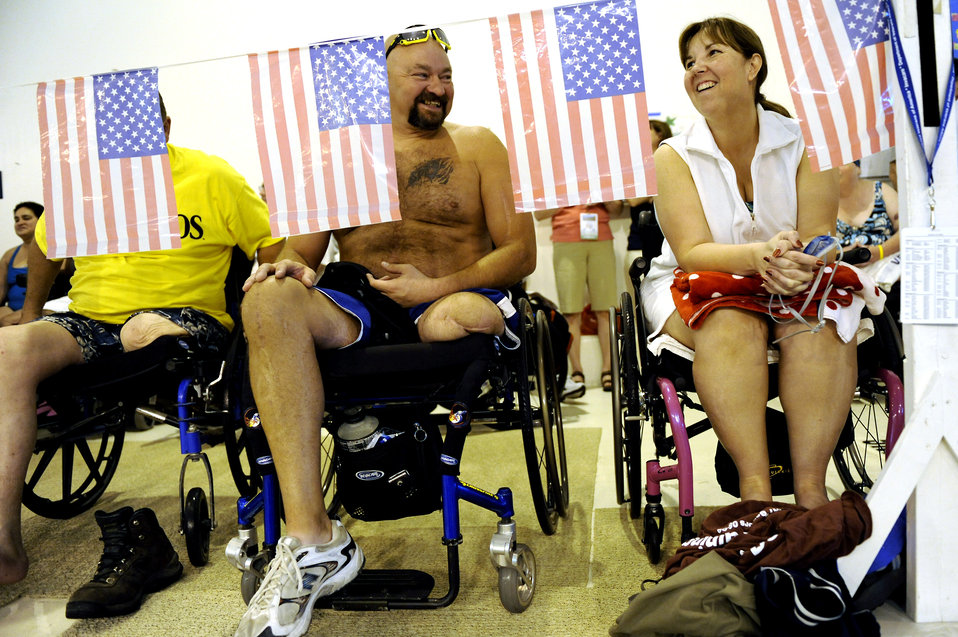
Former Airman competes in veterans Wheelchair Games

Dave Nelson and Terri Fuda laugh as they wait their turn to compete in the swimming competition held at the Whitworth University swimming pool during the 29th National Veterans Wheelchair Games July 15 in Spokane, Wash. Ms. Fuda is an Air Force veteran from Gillespie, Ill. and Mr. Nelson is a Navy veteran from Omaha, Neb. The 29th National Veterans Wheelchair Games runs through Julu 19.